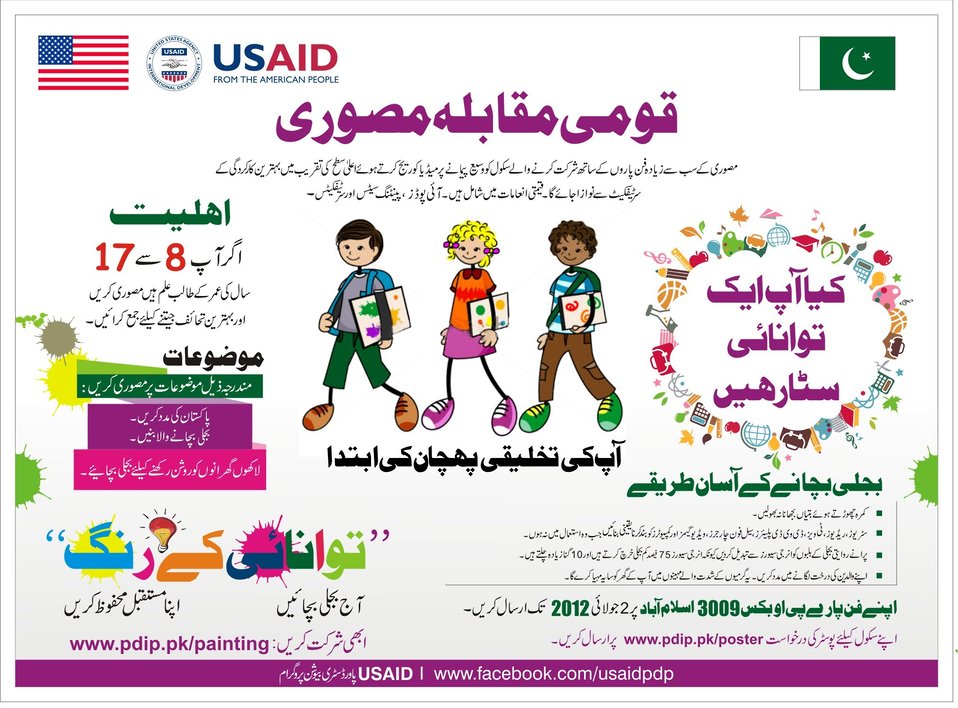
English ad - Colors of Energy

Islamabad, June 8, 2012: Homes and schools are among the largest consumers of electricity in Pakistan, and if children are engaged and involved in nationwide energy conservation, it would result in the reduction of load shedding and uninterrupted electricity to consumers. Energy consumption in everyday life results in environmental degradation and load shedding since energy is produced from fuel, which is culled from coal, oil and natural gas. These non-renewable sources of energy millions of years in the making will eventually dry up if not conserved.